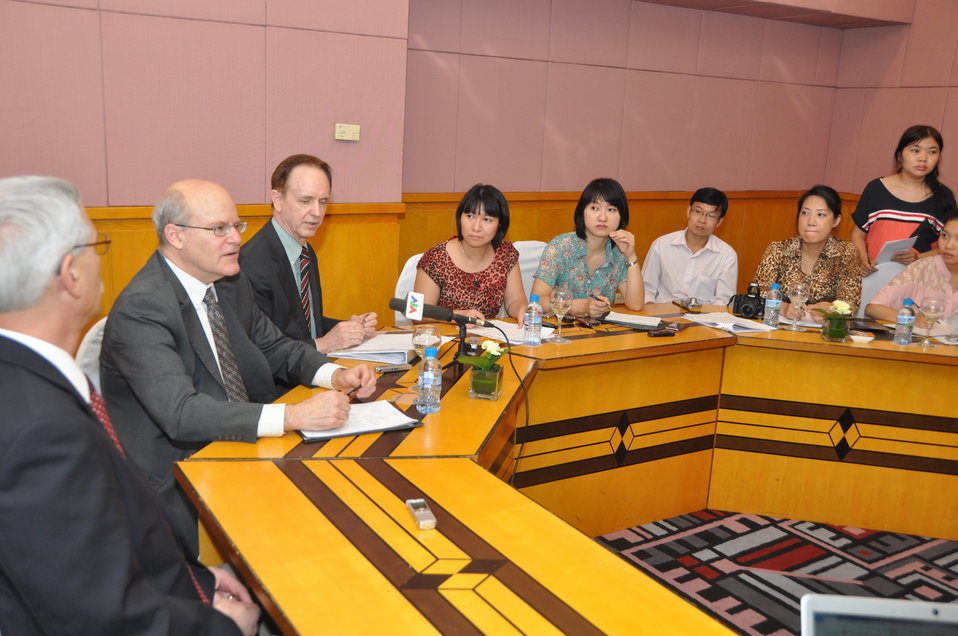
USAID Deputy Administrator Donald Steinberg meets the press in Hanoi on May 8.

USAID Deputy Administrator Donald Steinberg Visits Vietnam: USAID Photo